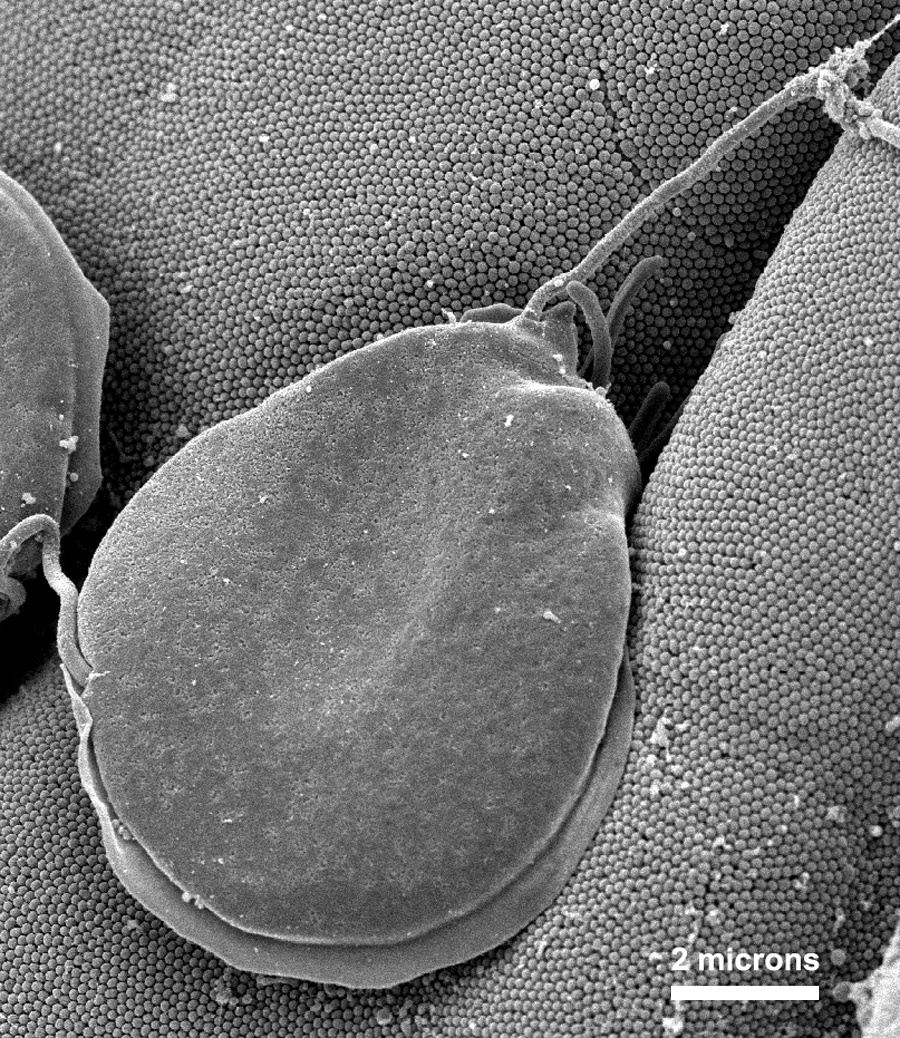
This scanning electron micrograph (SEM) depicted a Giardia muris protozoan settled atop intestinal mucosal villi, adhering itself to the microvillous border of intestinal epithelial cells. Each small circular profile under the protozoan represents the rounded tip of a single microvillous, and it is estimated that 2000 to 3000 microvilli cover the surface of a single intestinal epithelial cell.